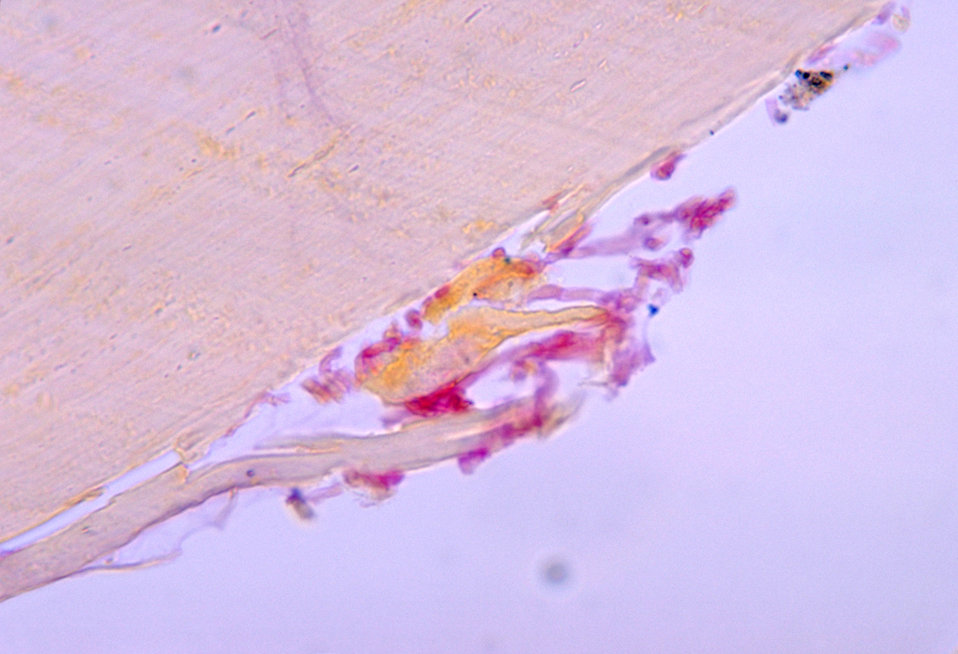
This photomicrograph depicts the histopathologic changes seen in onychomycosis due to a Fusarium sp. of fungus.